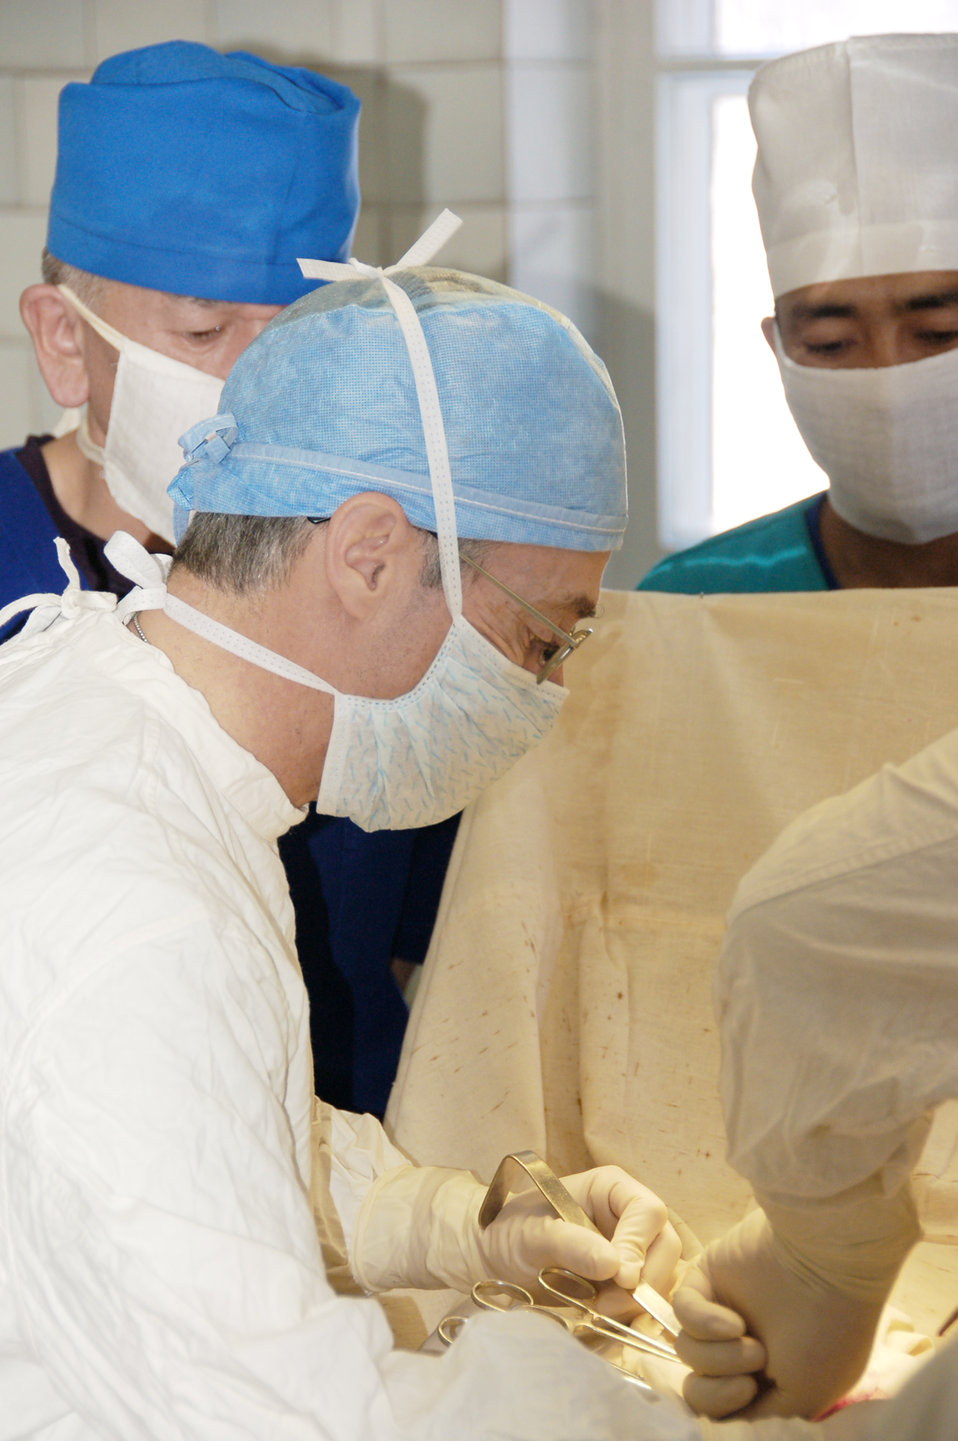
Airmen perform operations with Kyrgyz surgeons

Col. (Dr.) Jerrold Flyer performs a surgery with a Kyrgyz surgeon during a joint medical operation at a Kyrgyz Republic military hospital in Kyrgyzstan Dec. 11, 2009. A team of Airmen visited the hospital and performed two separate surgical operations. The joint procedures were part of an ongoing partnership between medical Airmen at the Transit Center and their counterparts at the Besh-Kungei Hospital. Doctor Flyer is the commander of the 376th Expeditionary Medical Group at the Transit Center at Manas, Kyrgyzstan.